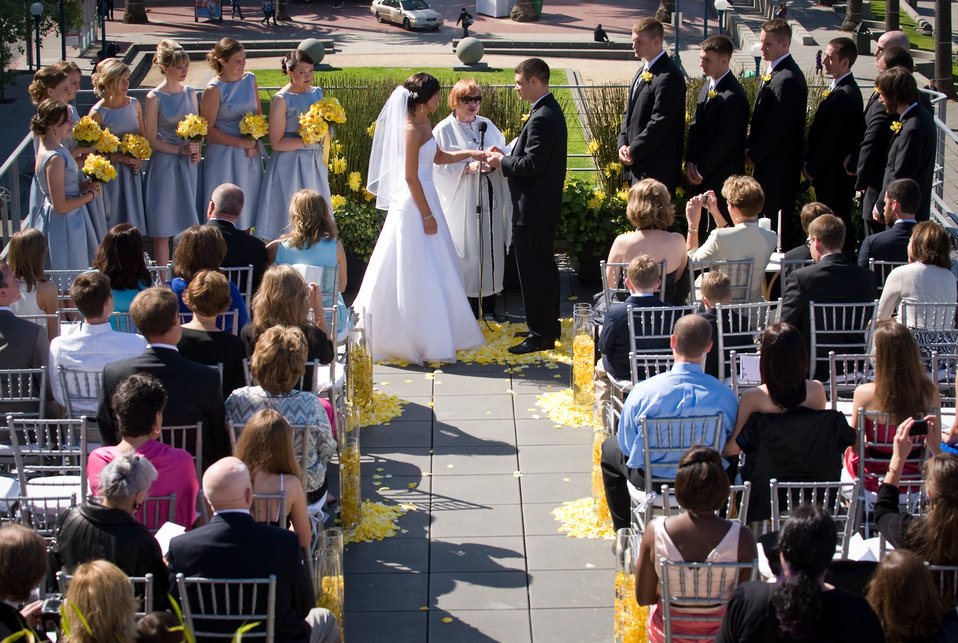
San Francisco Dream Wedding

The wedding ceremony for Vanessa Muza Teskey and Capt. Mike Hawkins took place on the rooftop of Hotel Vitale on San Francisco's waterfront May 14, 2010. They won the San Francisco Dream Wedding Giveaway with viewer votes as vendors donated $100,000 of goods and services for the wedding.